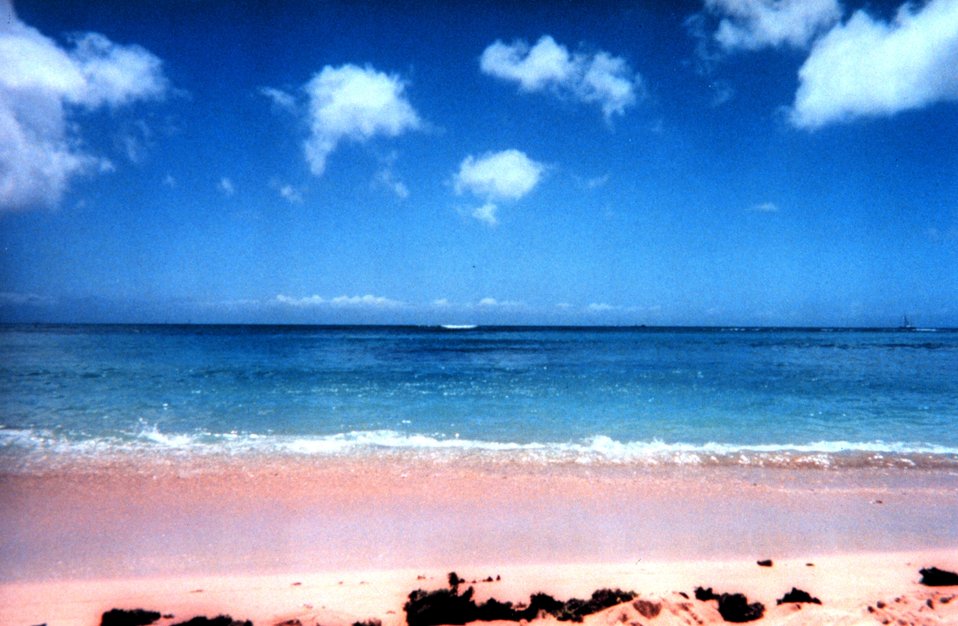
Blue sky and blue waters at Waikiki.